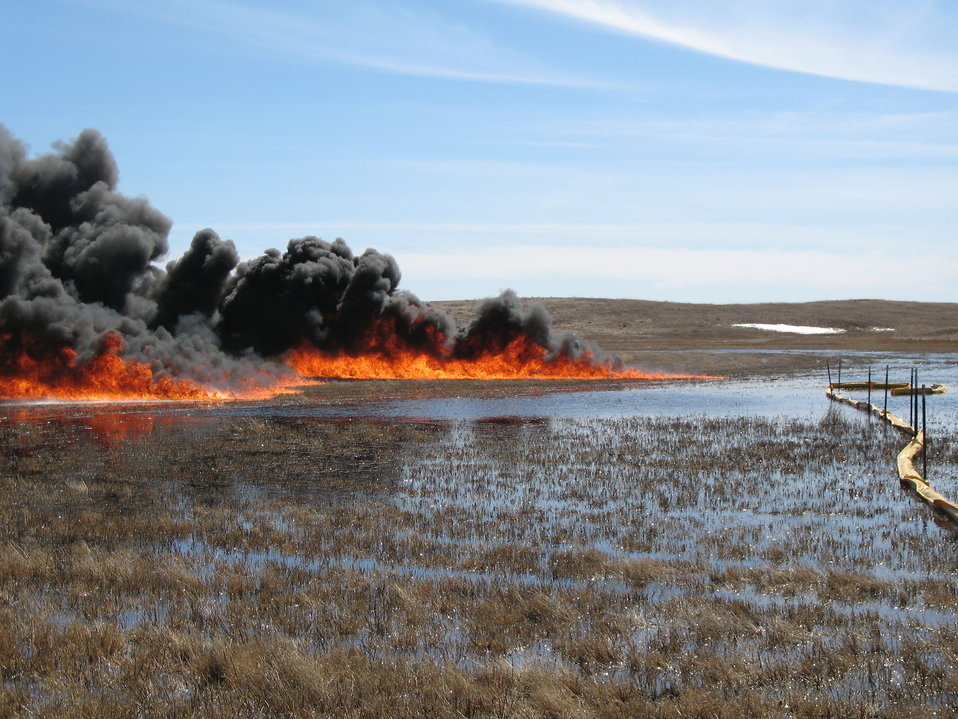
In situ Burn on Wetland

In situ burn at a crude oil spill on a wetland in Mountrail County, North Dakota.